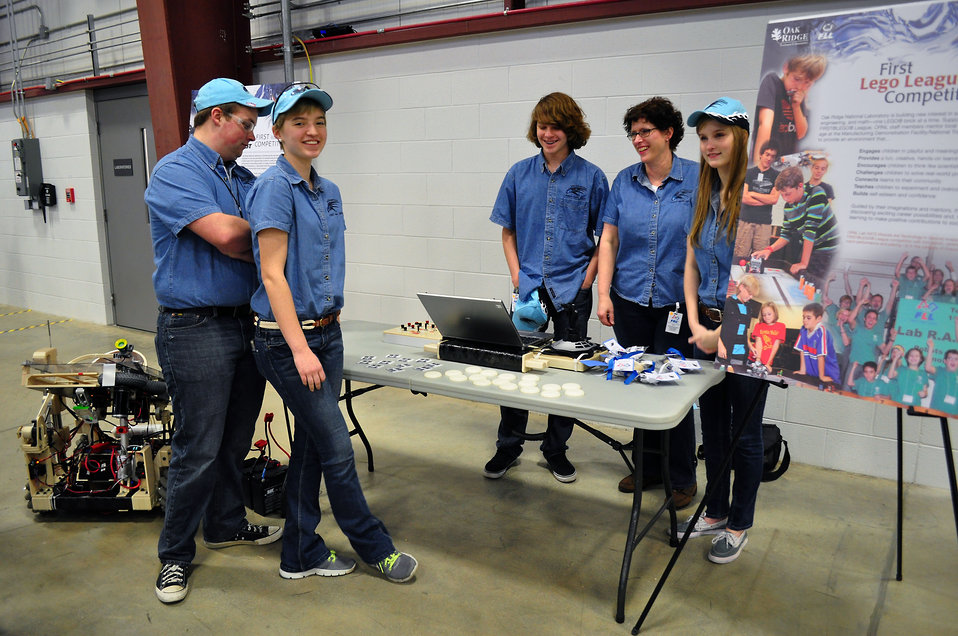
Carbon Fiber Technology Facilty Open House Oak Ridge Tennessee

13-025 DOE photo Lynn Freeny